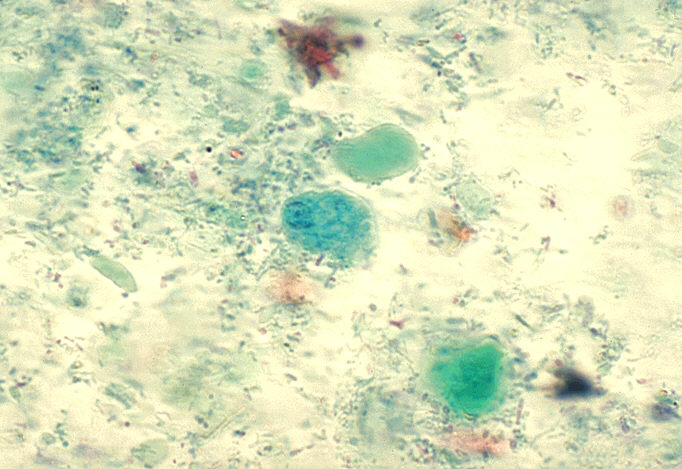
Entamoeba histolytica trophozoite. Wheatley's trichrome stain.